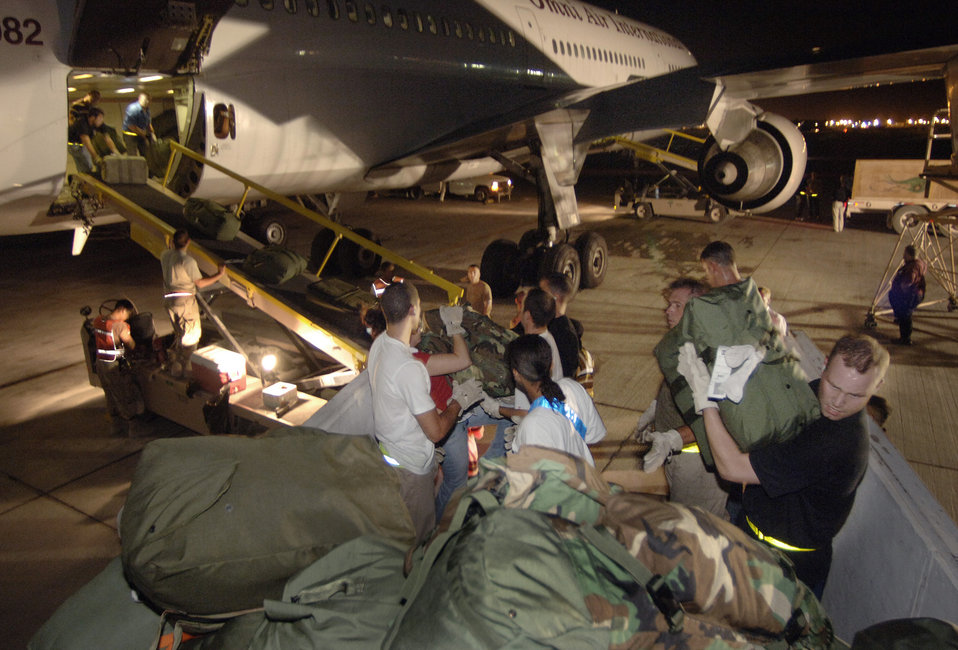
Work begins when boots hit the ground

Minutes after landing in Southwest Asia, Senior Airman Matt Eggleston joins 30 other volunteer passengers Sept. 17 in removing luggage from the cargo hull of a commercial DC-10 airliner.